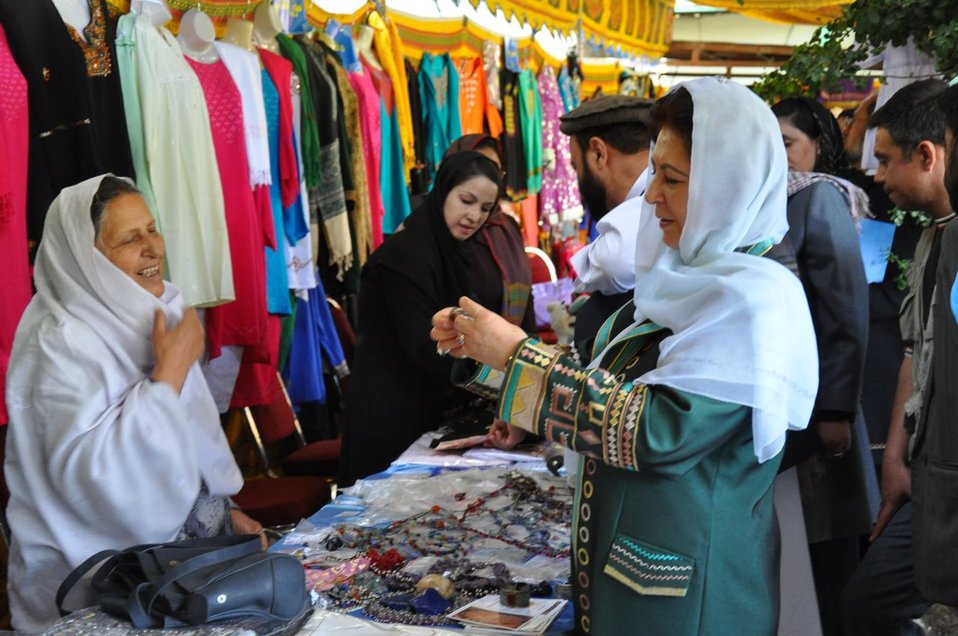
Mother's Day in Afghanistan

Minister Ghazanfar looks at jewelry